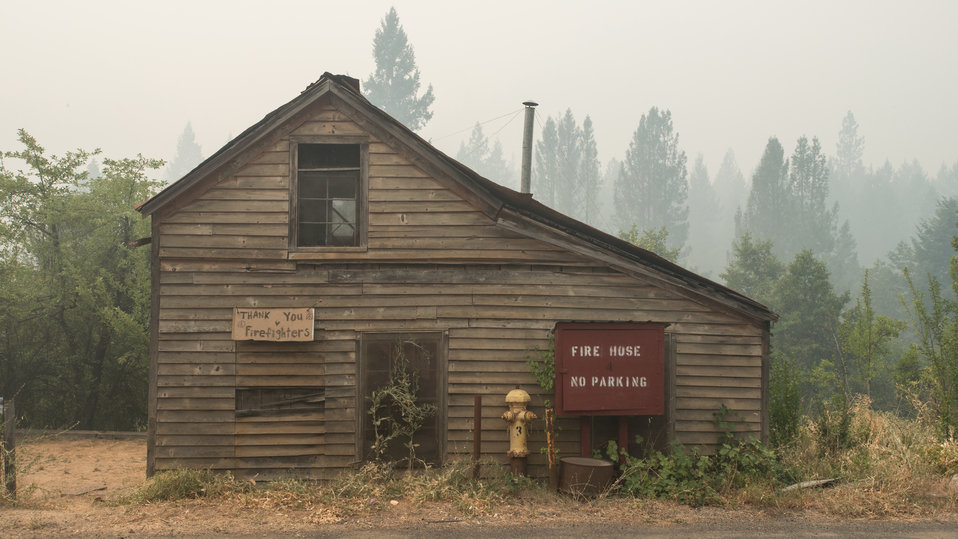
Smoke permeates the air of Sawyers Bar, CA, on Wednesday, Aug. 6, 2013. Salmon River Complex Fire is northwest of Sawyers Bar and west of Etna and Yreka, CA in the Klamath National Forest.